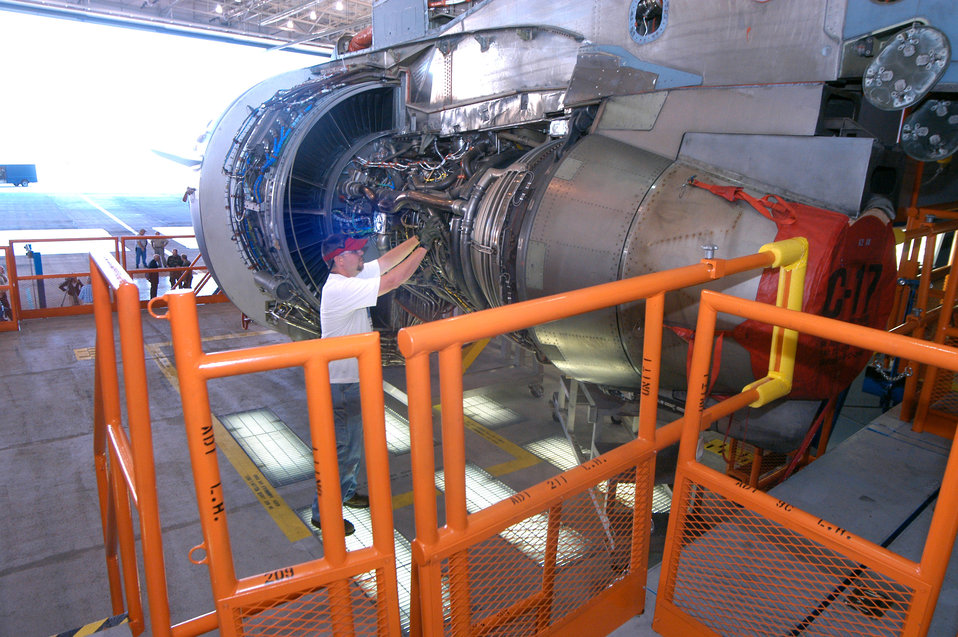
Underwing platform aids C-17 maintainers

Aircraft mechanic Mitch Faraone demonstrates how accessible the engine on the C-17 Globemaster III is on the new underwing maintenance platform Sept. 17 at Robins Air Force Base, Ga.